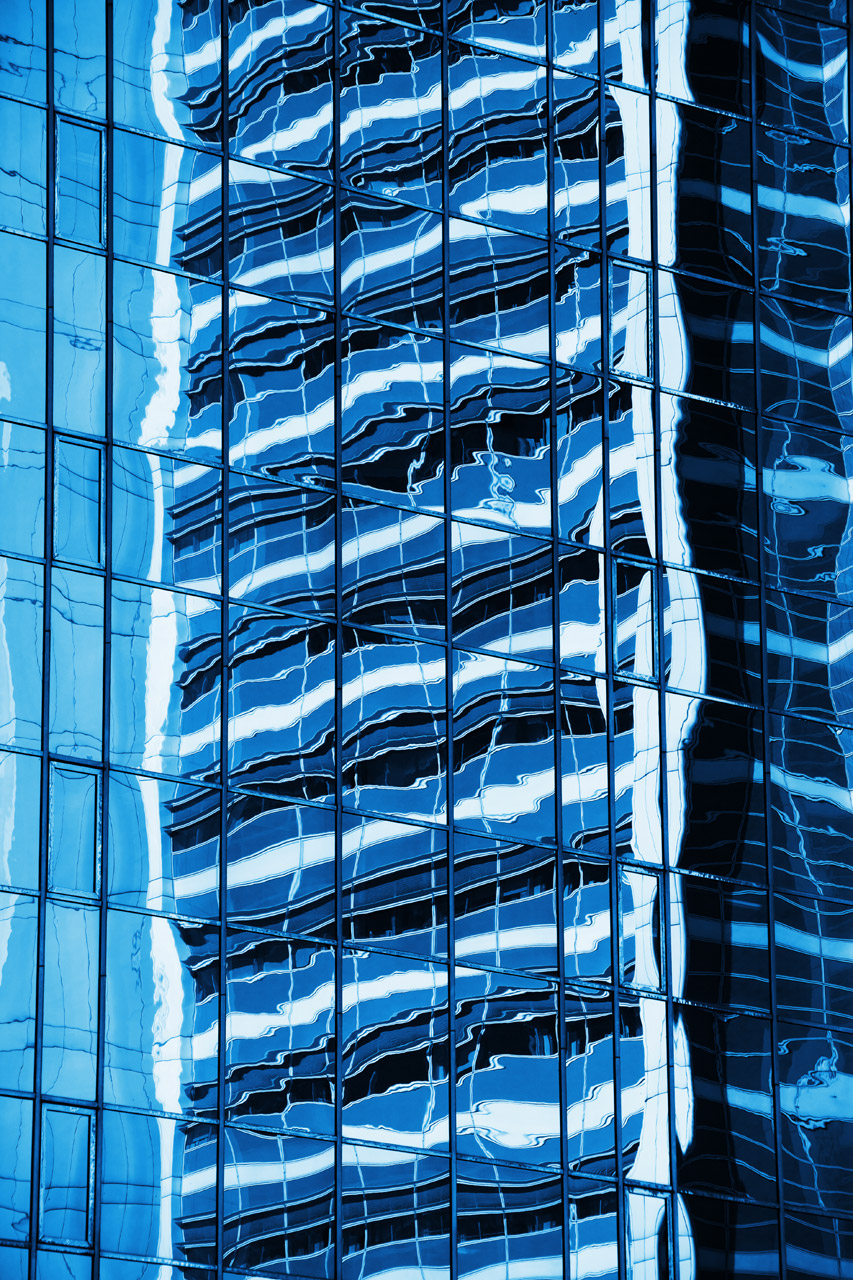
Reflection in windows

Skyscraper reflecting another office building in its widows.